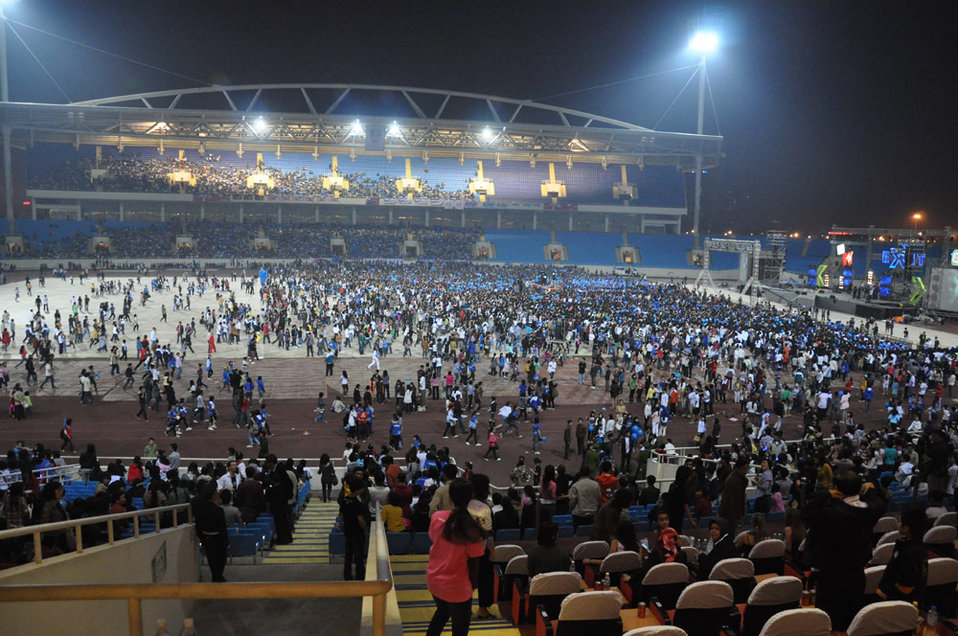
USAID Vietnam and MTVEXIT against Human Trafficking

Hanoi concert, March 27, 2010